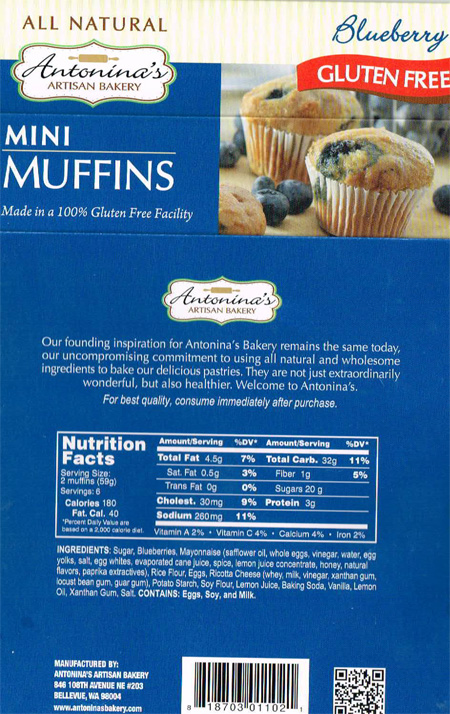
RECALLED – Gluten free blueberry mini muffins

December 12, 2013 – Product Recall – Pin Hsiao & Associates, LLC. Issues Allergy Alert on Undeclared Walnuts in Gluten Free Blueberry Mini Muffins - 12 pk.